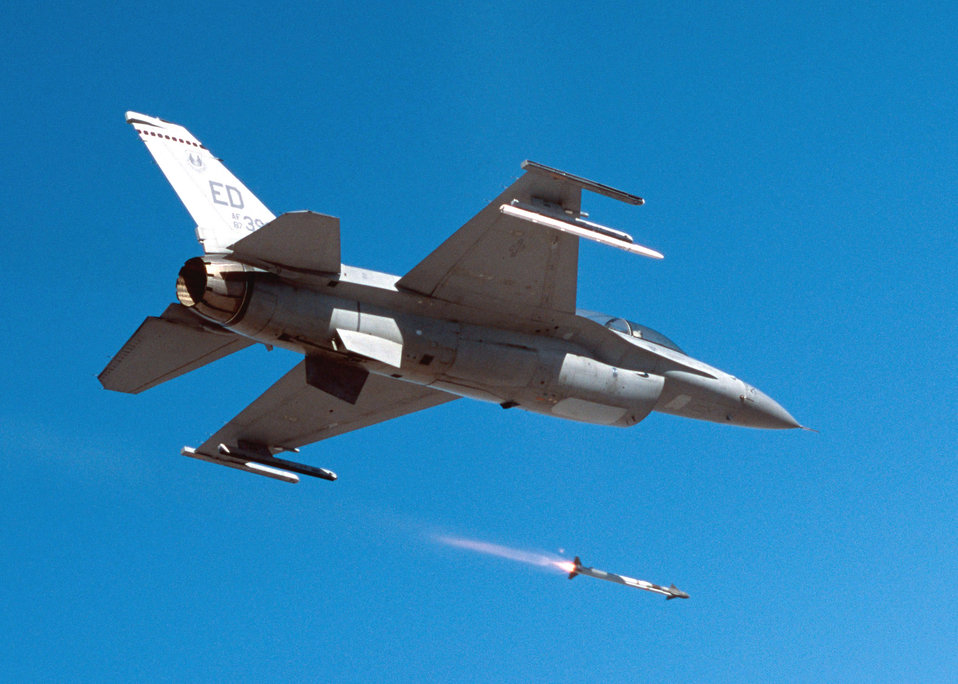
Fire!

EDWARDS AIR FORCE BASE, Calif. -- A pilot from the 416th Flight Test Squadron successfully fires the newest variant of the AIM-9 Sidewinder for the first time from an F-16 Fighting Falcon on April 9.